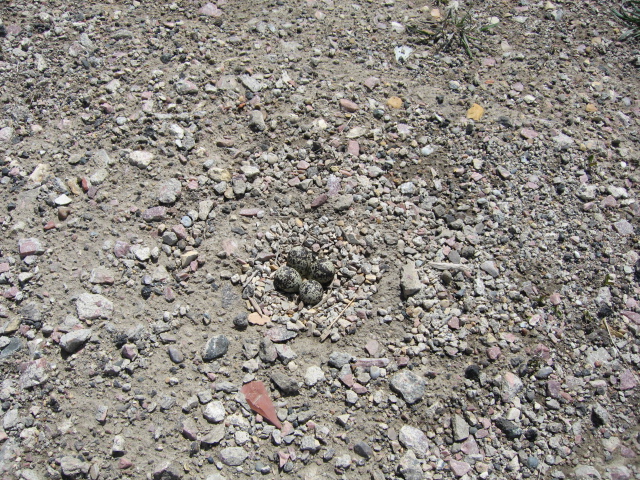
Killdeer Nest